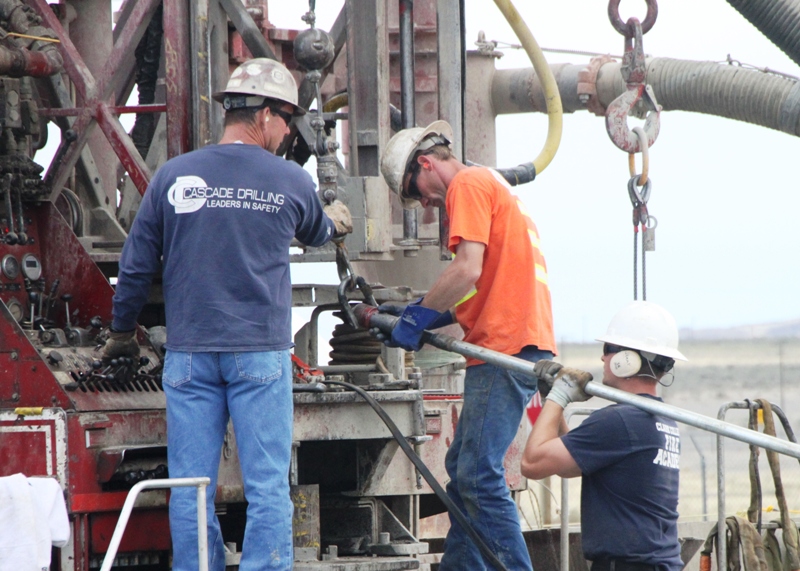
Small Business Owner is Grateful for Opportunity from Recovery Act

A drilling crew from Cascade Drilling works at a well site at the Hanford Site.